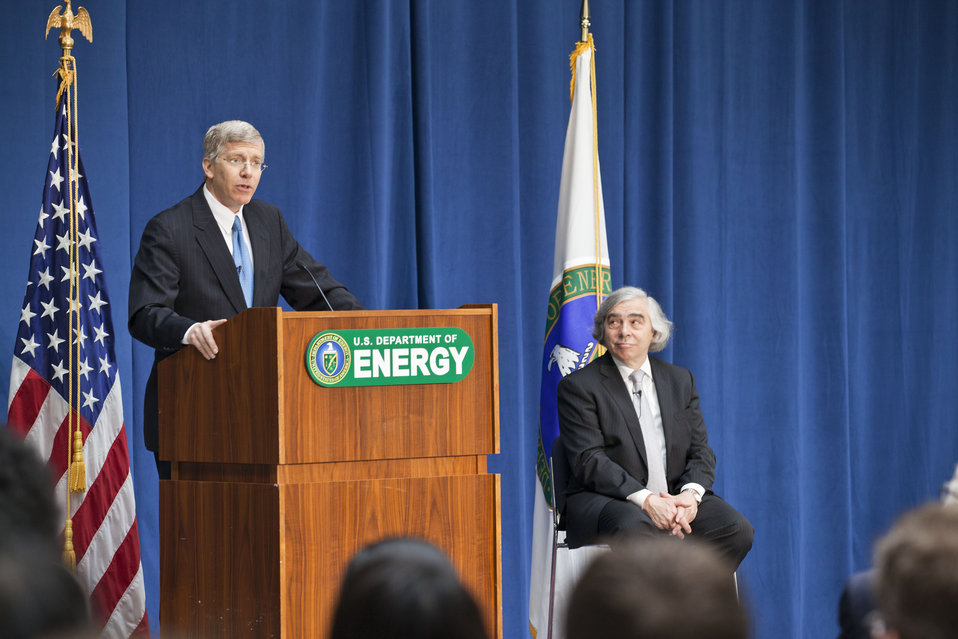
Deputy Secretary Poneman Introduces Dr. Moniz

This morning among friends, family and colleagues, Dr. Ernest Moniz (right) was officially sworn in as the 13th United States Secretary of Energy. Deputy Energy Secretary Daniel B. Poneman (left) began this morning's ceremony with opening remarks.